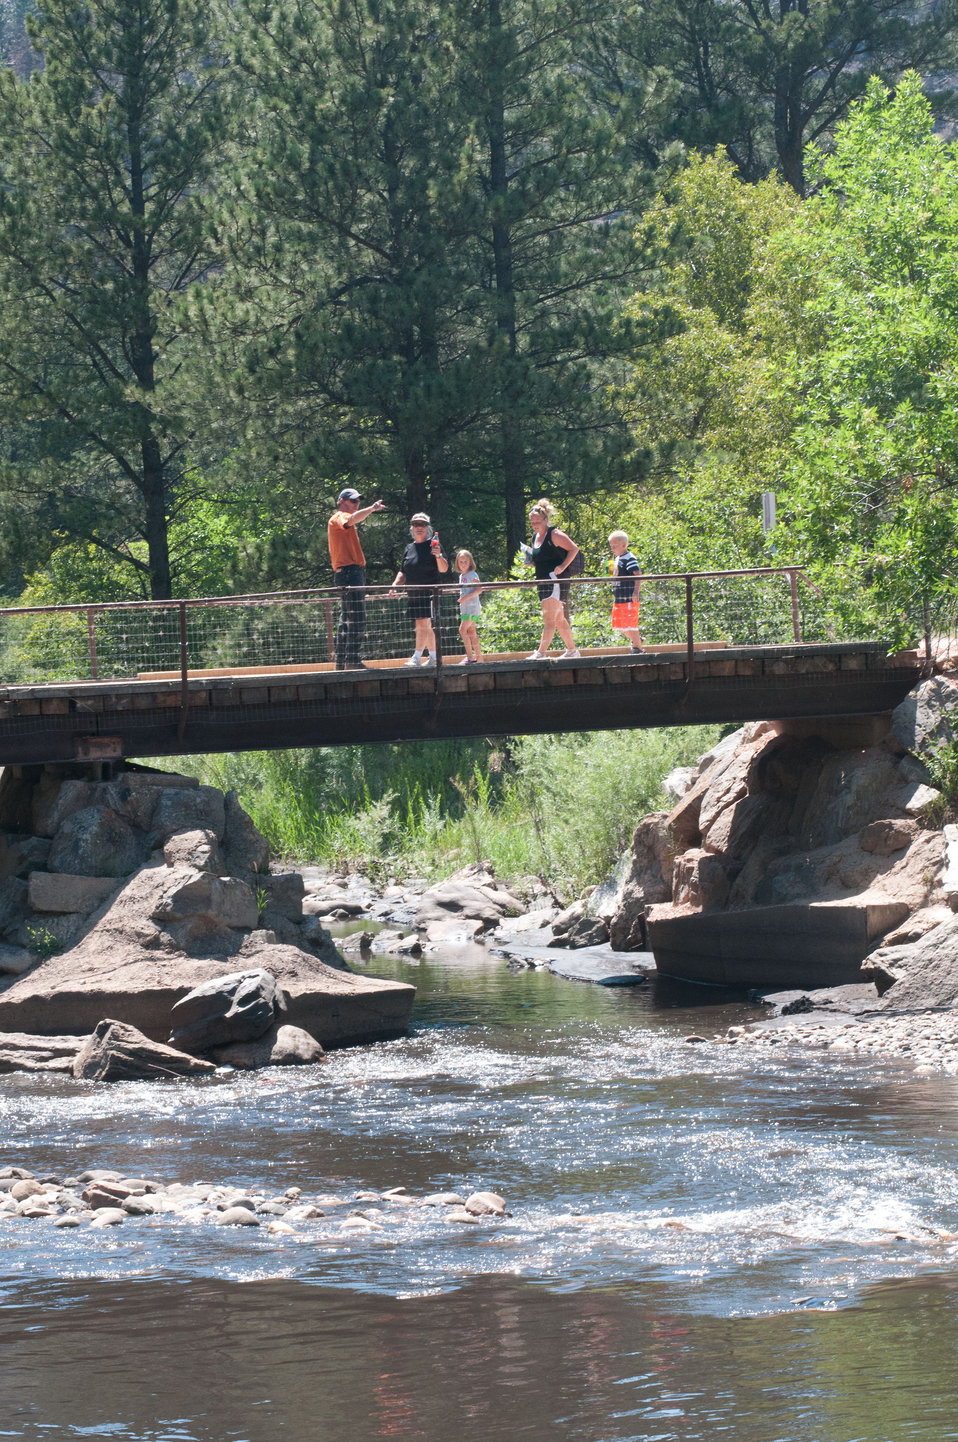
U.S. Department of Agriculture District Conservationist Todd Boldt, left, talks with Patty Jackson, Alison, Amy and Jackson Temples, three generations of a family, walking across the bridge to see the effects of the Hewlett Gulch Fire, in the Poudre Canyon area, on Friday, July 20, 2012, near Fort Collins, Colorado. “Talking with people is one of the most important things I do. By talking with them, they will talk to maybe 50 others,“ said Todd Boldt. “Explaining the effects of the fire and the steps that the City of Greeley and USDA are doing, go a long way to educate the public.” Unmitigated runoff have turned the water in this river from clear water to nearly black water heavily laden with ash, silt, and burnt debris that recent thunderstorms have already washed down from the mountainsides. When he dug down into the riverbanks, he found ash 18 inches below the surface, at the water’s edge. At its peak more than 400 firefighters were battling fires pushed by 50 mph winds. When the last embers were cooled, more than 12-square miles lay blacked at a cost of approximately 3.2 million dollars to fight. The aerial distribution of straw has successfully kept nearby Seaman Reservoir clean for the drinking water of the City of Greeley. Forest Service lands receive straw, while private and other lands receive a seed mix and straw to promote ground cover plant growth on ash-covered lands. In total, 1,800 tons of straw will be applied during the 14-day operation. One quarter of the cost was paid by the City of Greeley and the U.S. Department of Agriculture funded the remainder.